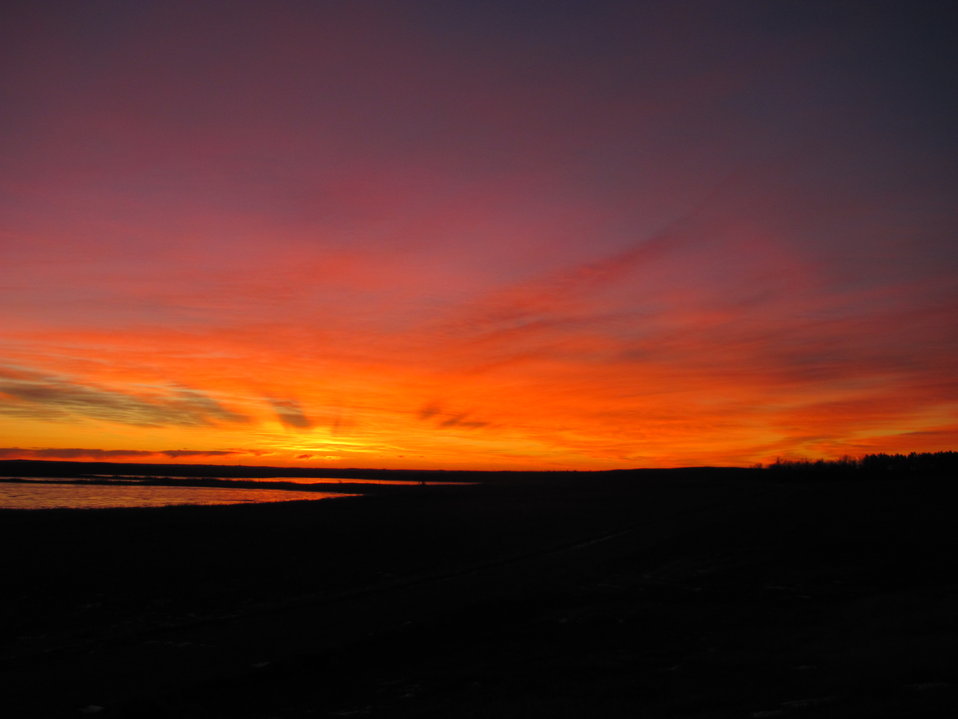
Chase Lake Sunrise

This sunrise was seen just behind the Chase Lake Headquarters office.